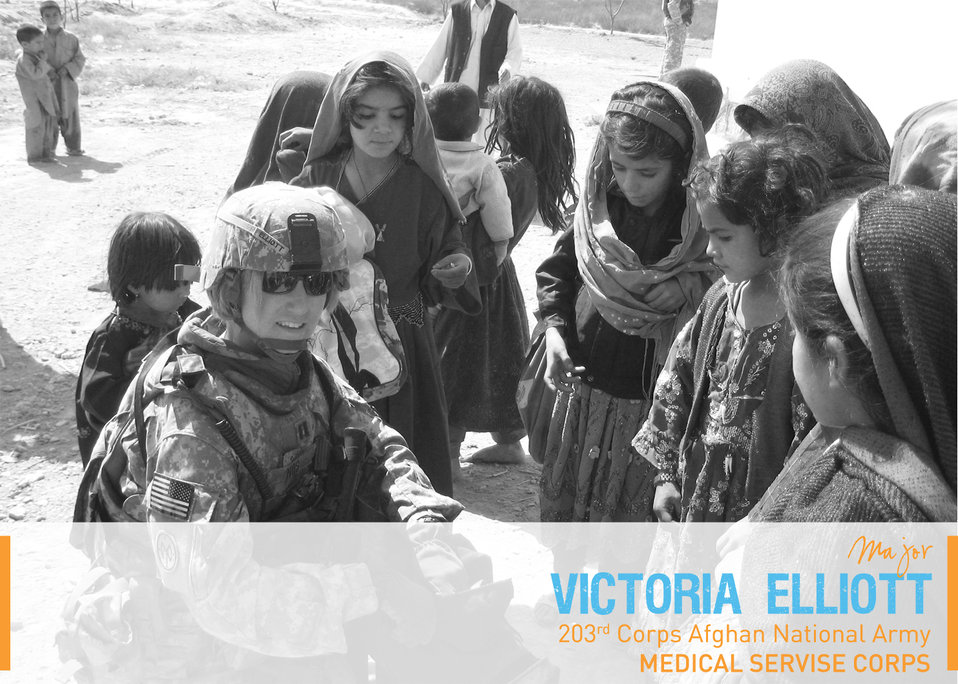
Portraits in Courage Vol 4: Maj. Victoria Elliott, Medical Service Corps, 203rd Corps, Afghan National Army. She was in one convoy mission where she provided critical information to determine the enemy's position for a counter-attack plan. Her evasive driving skill rallied the rest of the convoy forward, out of the kill zone.